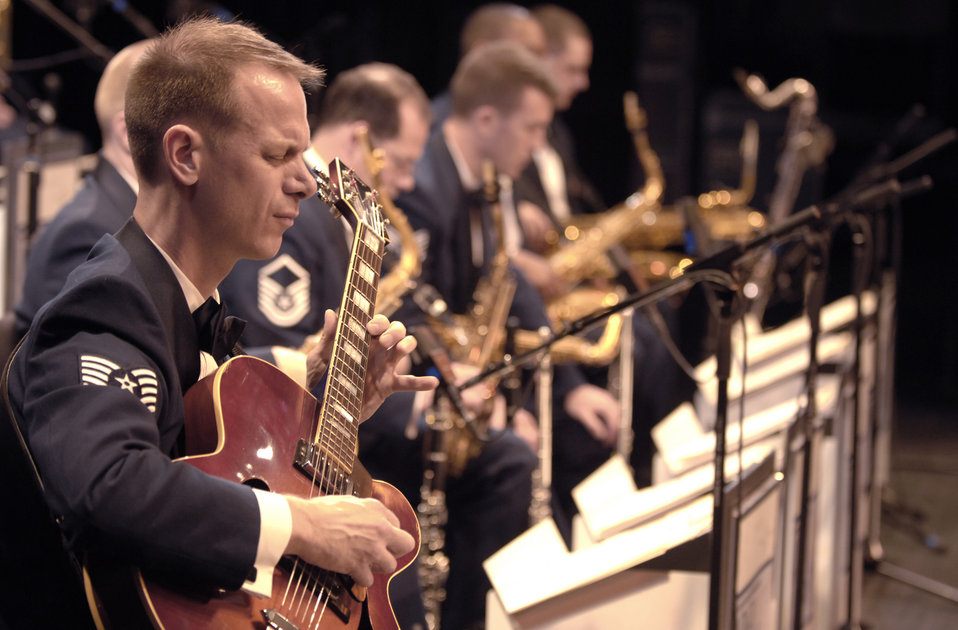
Airmen of Note wrap up

Tech. Sgt. Geoffrey Clay Reecer performs March 23, 2011, at Vanderbilt University, Nashville, Tenn. Sergeant Reecer is a guitarist with the Airmen of Note, the premier jazz ensemble of The U.S. Air Force Band.